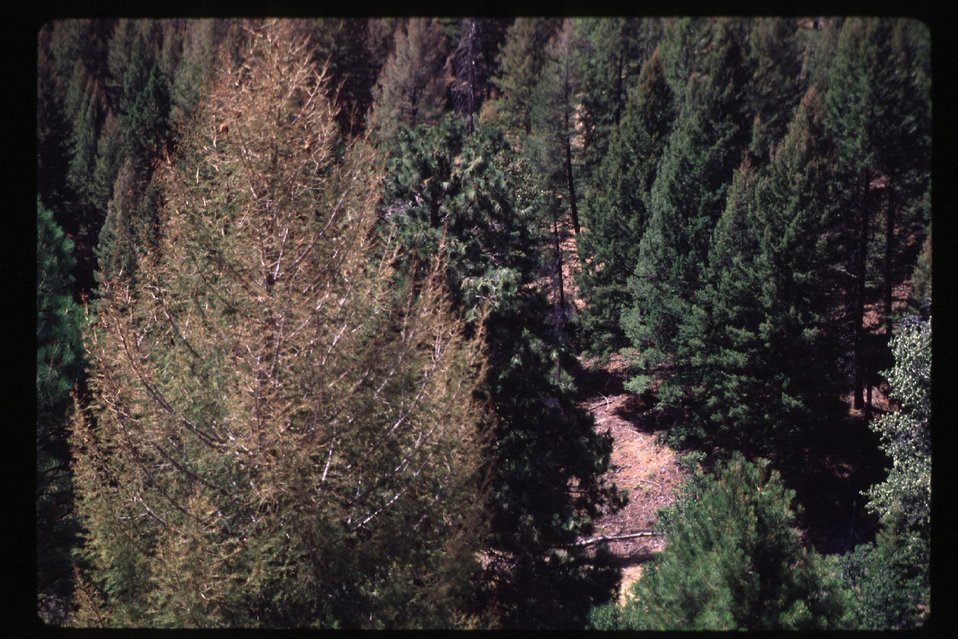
Tussock Moth damage Forestry Shoshone Field Office USRD Upper Snake River District